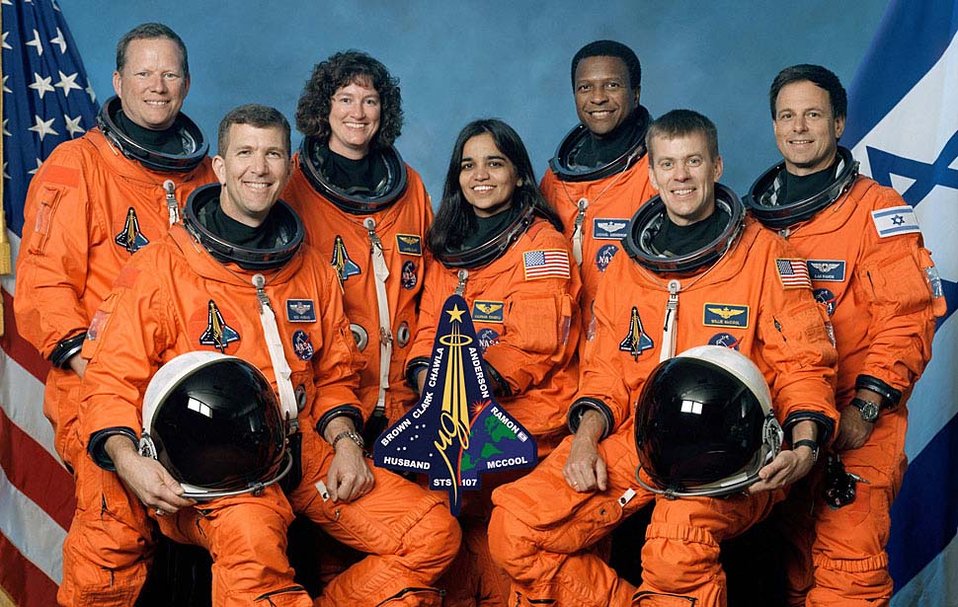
Michael P. Anderson

Members of the space shuttle Columbia who died upon re-entry to Earth's atmosphere in February 2003.